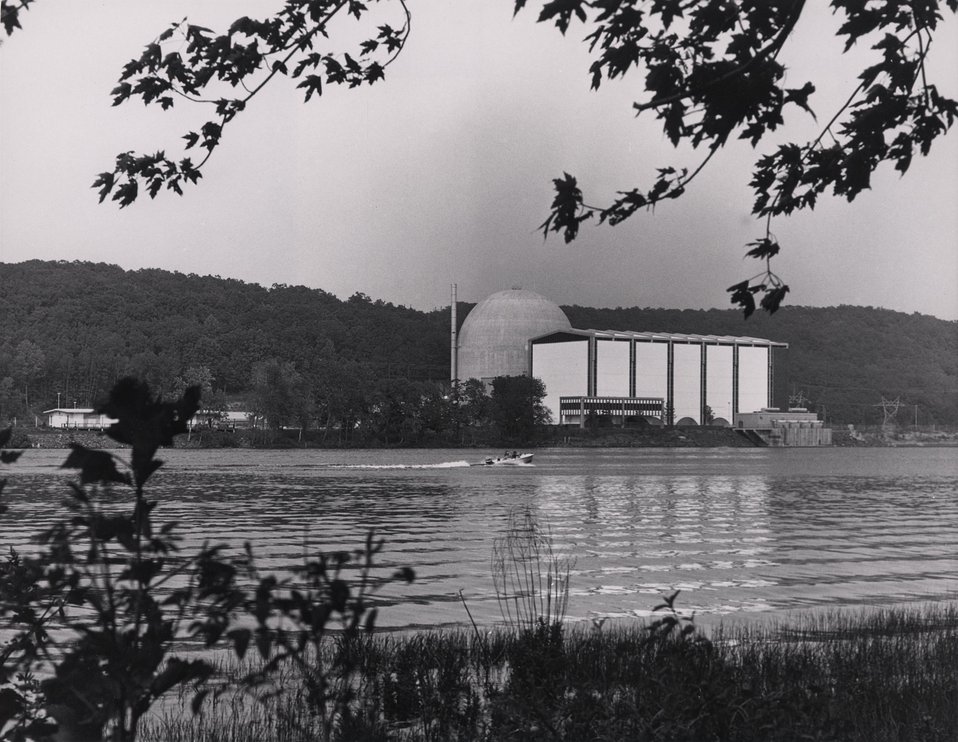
Haddam Neck Nuclear Plant.